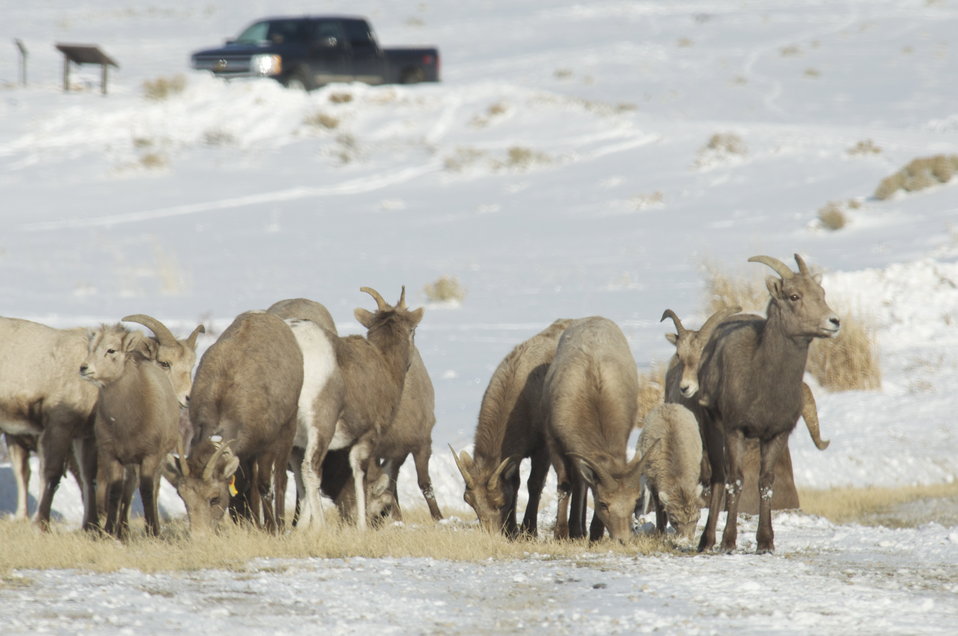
Strategically Placed Pullout

A vehicle uses a pullout to safely view bighorn sheep on the National Elk Refuge road. The road can become congested when bighorn sheep are present. Wildlife viewers are required to use parking areas along the road to safely view animals.

Credit: USFWS / Mike Nordell, National Elk Refuge winter naturalist